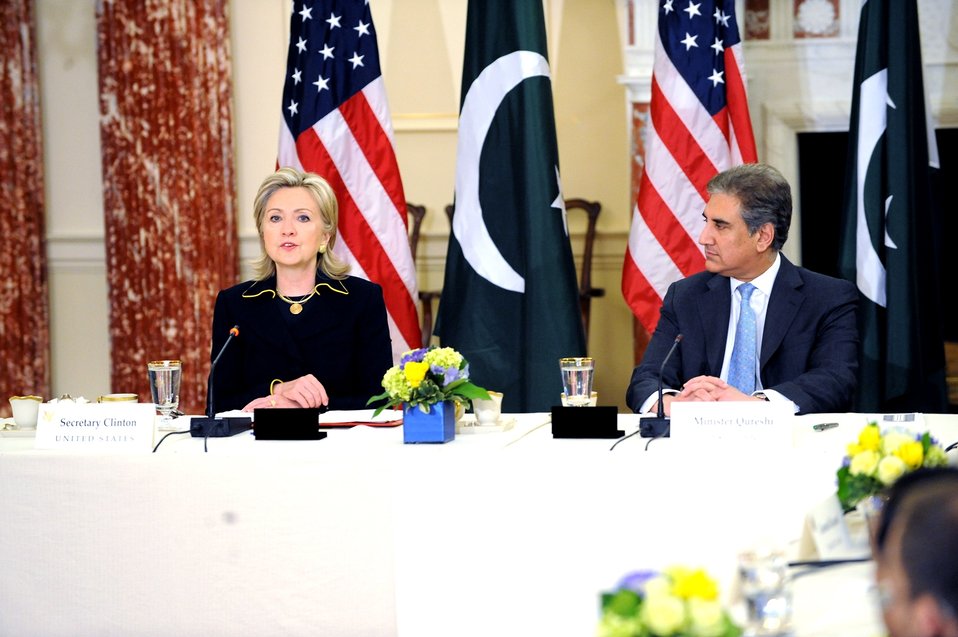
Secretary Clinton With Pakistani Foreign Minister Makhdoom Shah Mahmood Qureshi

U.S. Secretary of State Hillary Rodham Clinton speaks at the U.S. Pakistan Strategic Dialogue meeting, featuring Pakistani Foreign Minister Makhdoom Shah Mahmood Qureshi, at the U.S. Department of State in Washington, D.C., March 24, 2010.